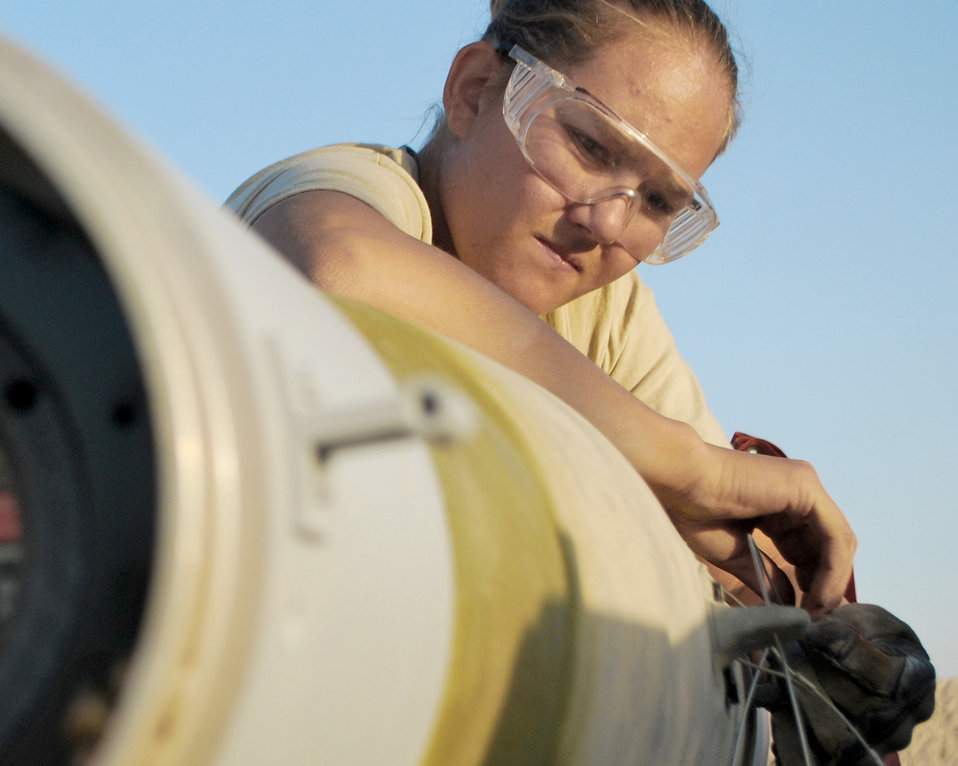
Ammo Airmen

Senior Airman Melissa Bissinger fastens the arming wire on a bomb Aug. 23, 2010, at Kandahar Airfield, Afghanistan. Airman Bissinger is a munitions systems specialist with the 451st Expeditionary Maintenance Squadron Munitions Flight.